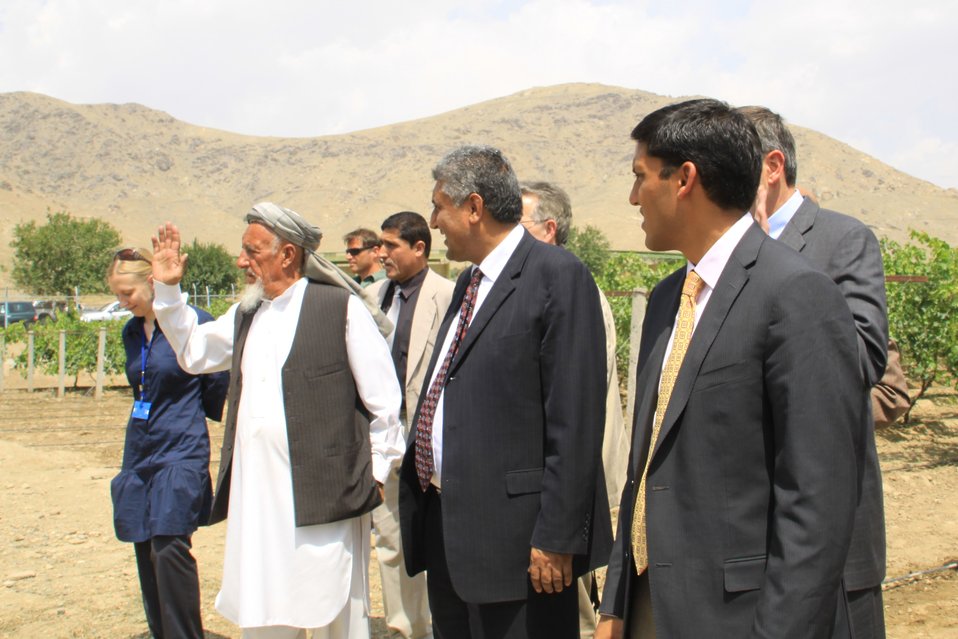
Badam Bagh Farm